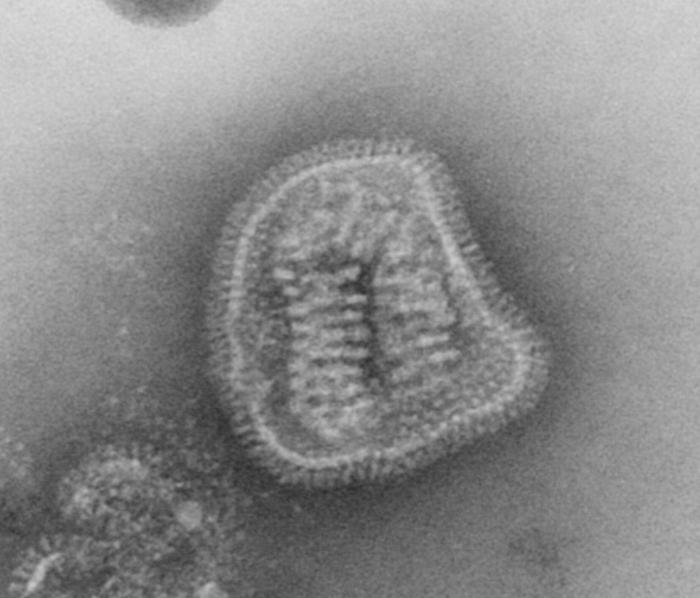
This negative-stained transmission electron micrograph (TEM) depicts the ultrastructural details of an influenza virus particle, or 'virion'. A member of the taxonomic family Orthomyxoviridae, the influenza virus is a single-stranded RNA organism.The flu is a contagious respiratory illness caused by influenza viruses. It can cause mild to severe illness, and at times can lead to death. The best way to prevent this illness is by getting a flu vaccination each fall.Every year in the United States, on average:- 5% to 20% of the population gets the flu- more than 200,000 people are hospitalized from flu complications, and- about 36,000 people die from flu. Some people, such as older people, young children, and people with certain health conditions, are at high risk for serious flu complications. See PHIL 10073 for a colorized version of this image.